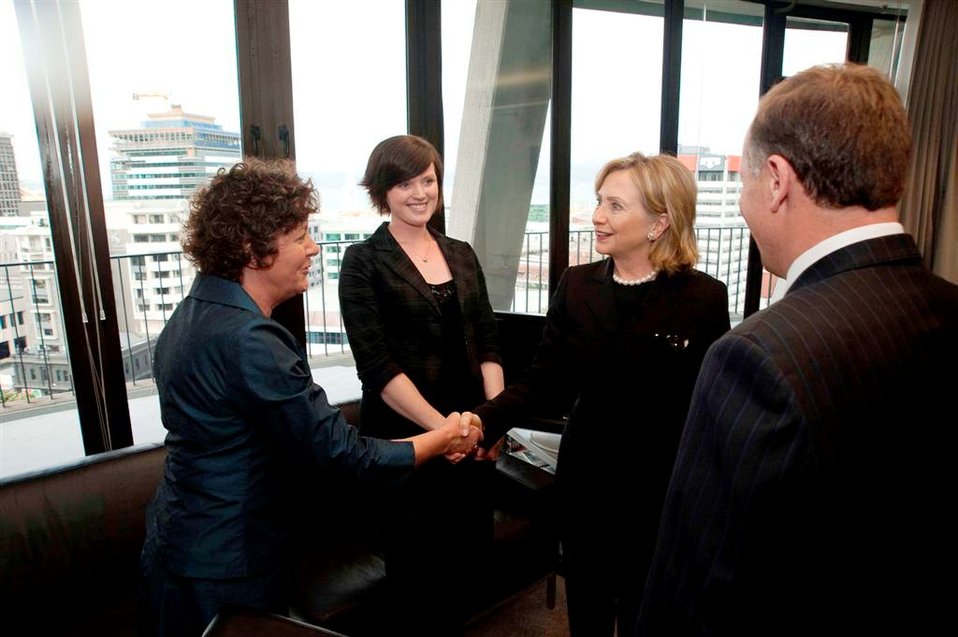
Secretary Clinton Shakes Hands With a New Zealander Woman

U.S. Secretary of State Hillary Rodham Clinton shakes hands with a New Zealander woman in New Zealand Prime Minister John Key's office, in Wellington, New Zealand, on November 4, 2010. New Zealand Prime Minister John Key is to the right of the Secretary.